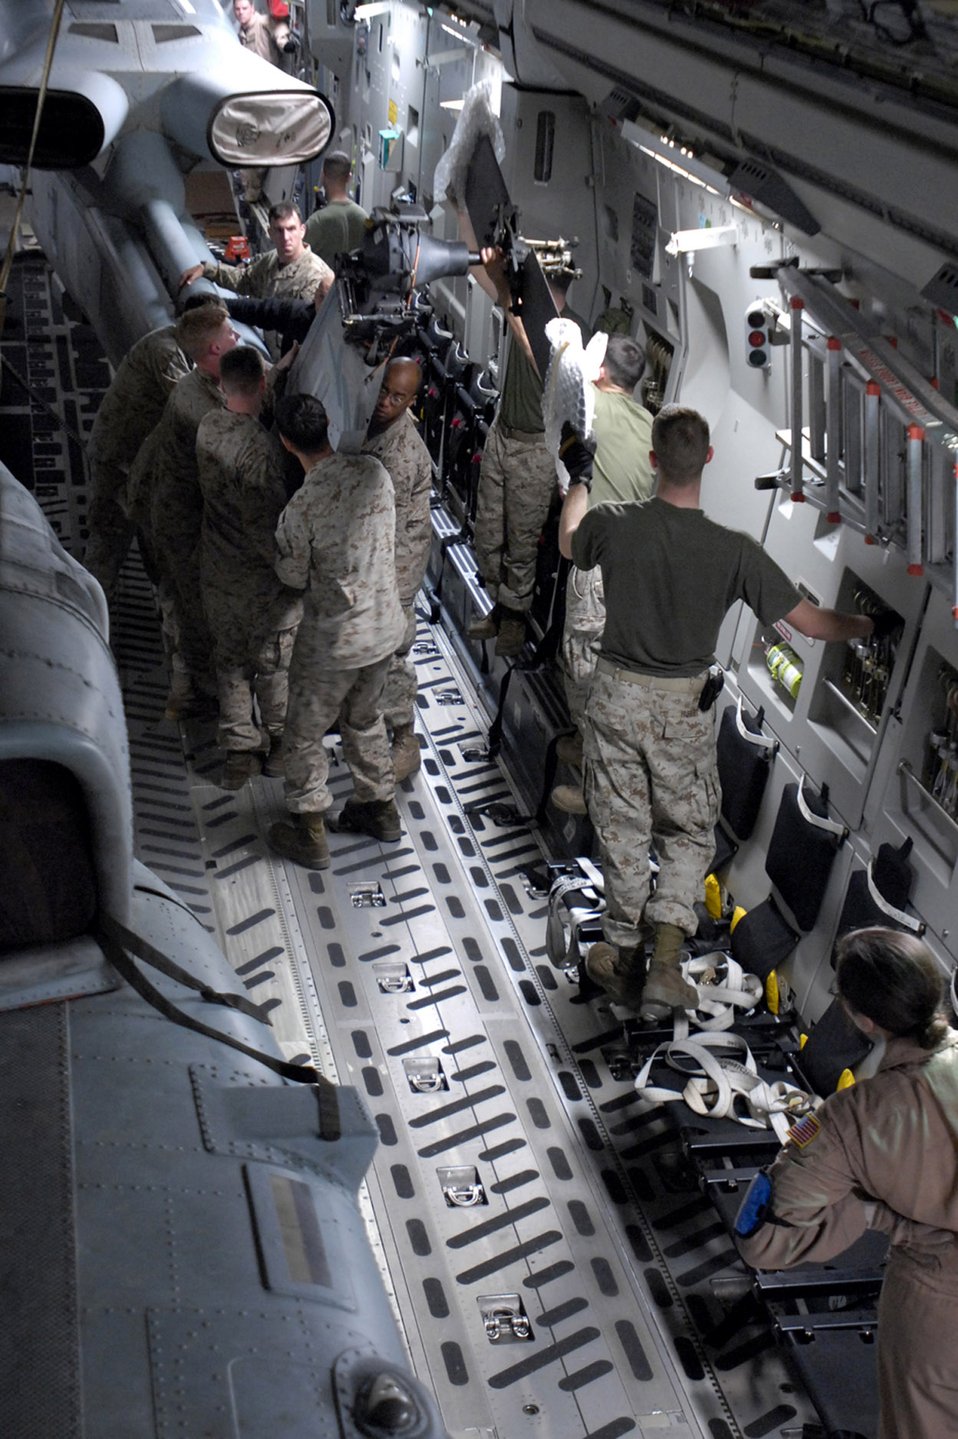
Marines move through Manas Air Base

Marines with the 24th Marine Expeditionary Unit load three AH-1W Super Cobra helicopters onto an Air Force C-17 Globemaster III March 16 at Manas Air Base, Kyrgyzstan. The Marines are headed downrange to Afghanistan as part of the troop plus-up authorized by the president in January. The Marines will be a part of the NATO-International Security Assistance Force, conducting operations to extend the authority of the Government of the Islamic Republic of Afghanistan.